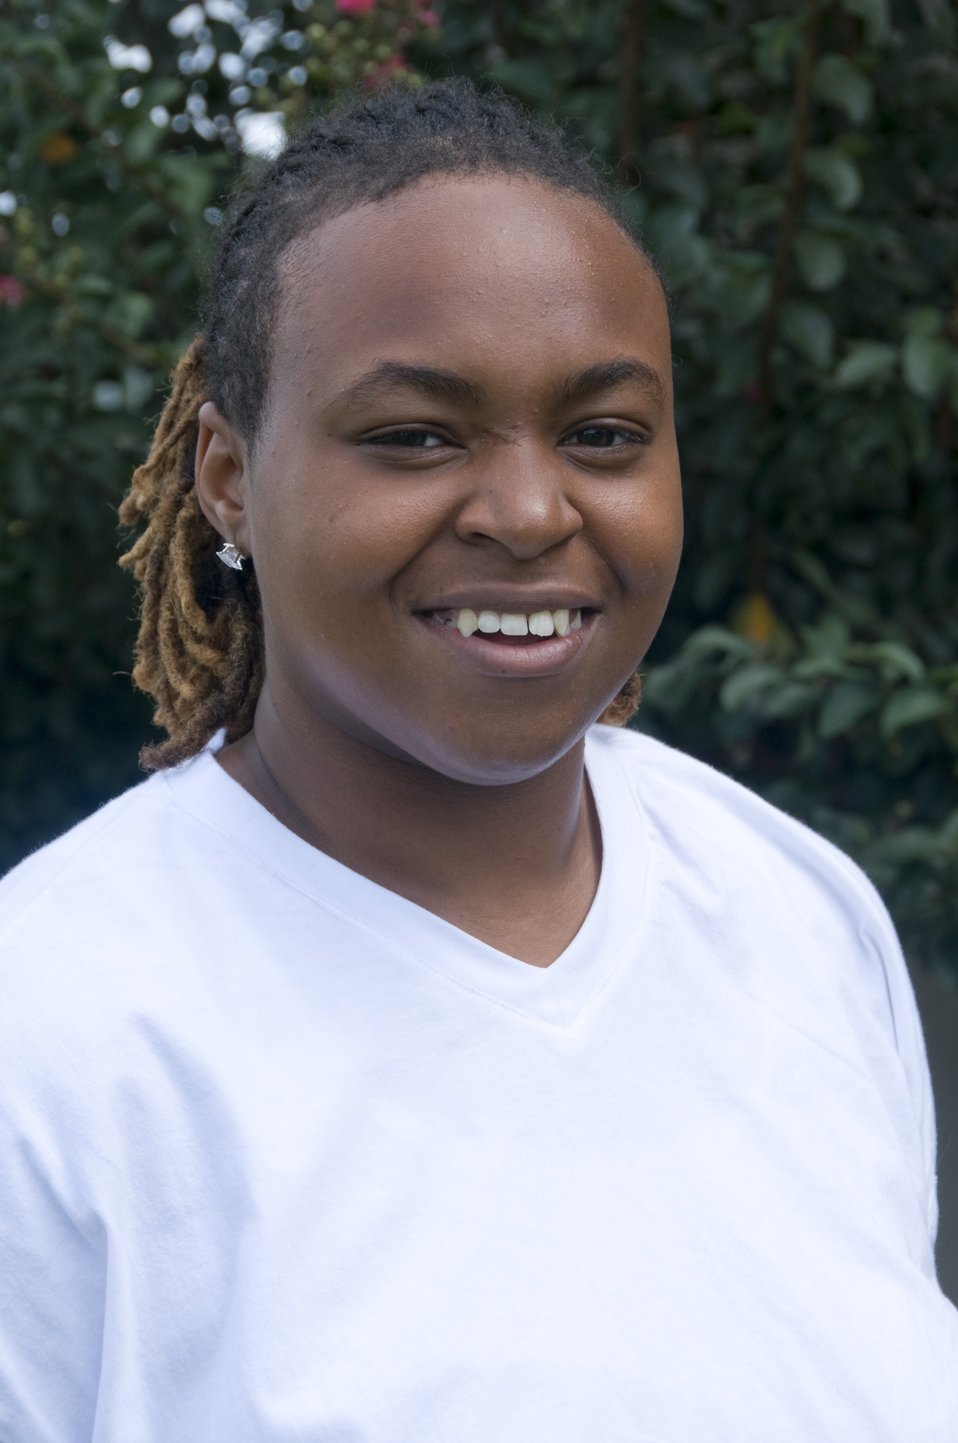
Kera Woods is a new hire at the Savannah River Site.